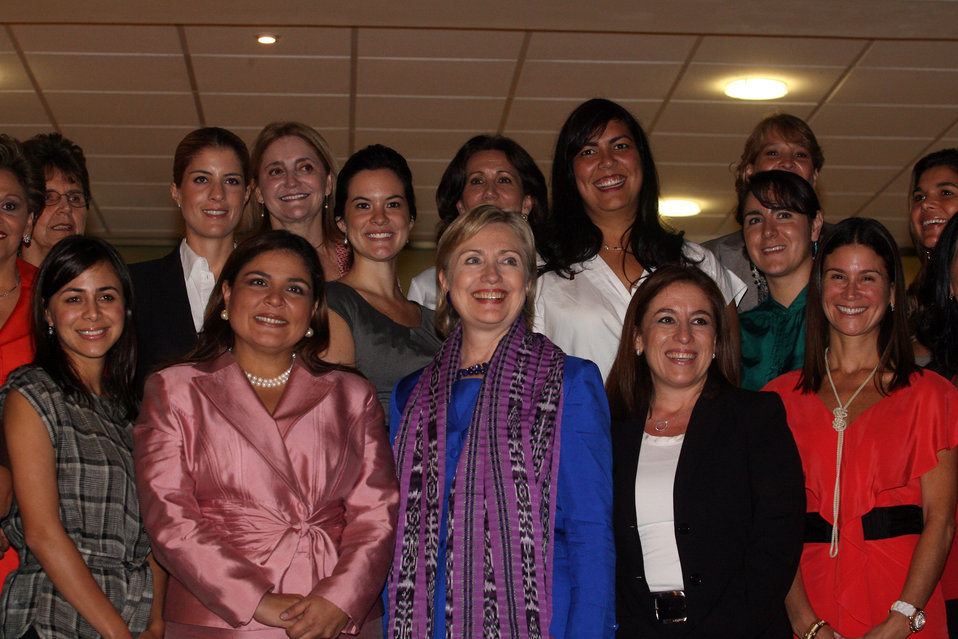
Secretary Clinton Moderates Women's Roundtable Discussion

Over 40 women participated in a roundtable discussion with moderators U.S. Secretary of State Hillary Rodham Clinton and Salvadoran Foreign Minister Argueta at the Foreign Ministry in San Salvador, El Salvador May 31, 2009. The forum provided an opportunity to discuss women’s essential role in recovering from the economic crisis and methods to combat the scourge of poverty and insecurity in the region.